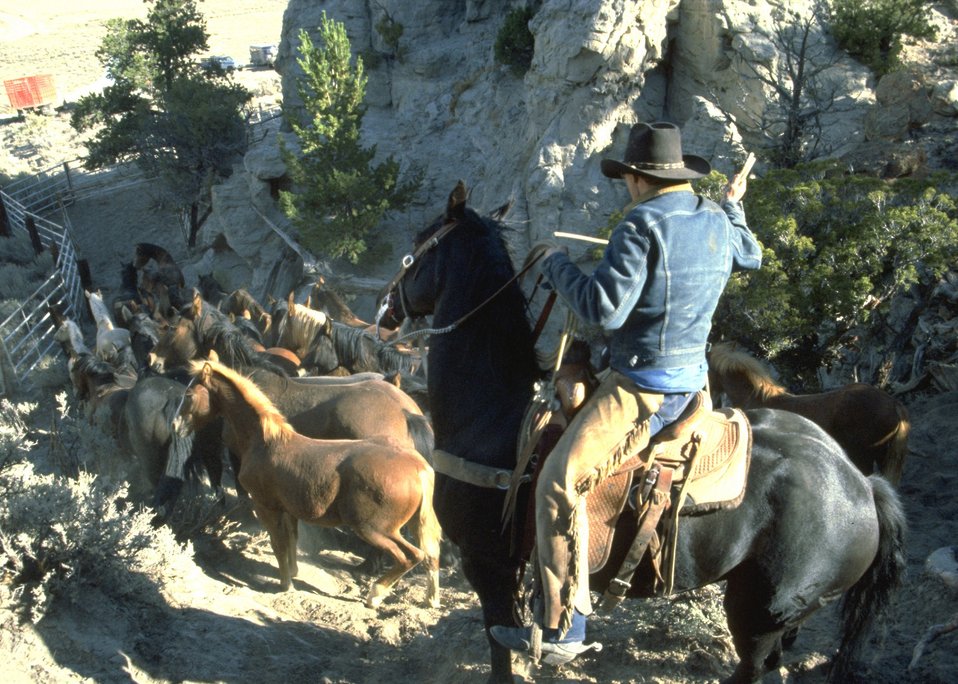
Wild horse round up.